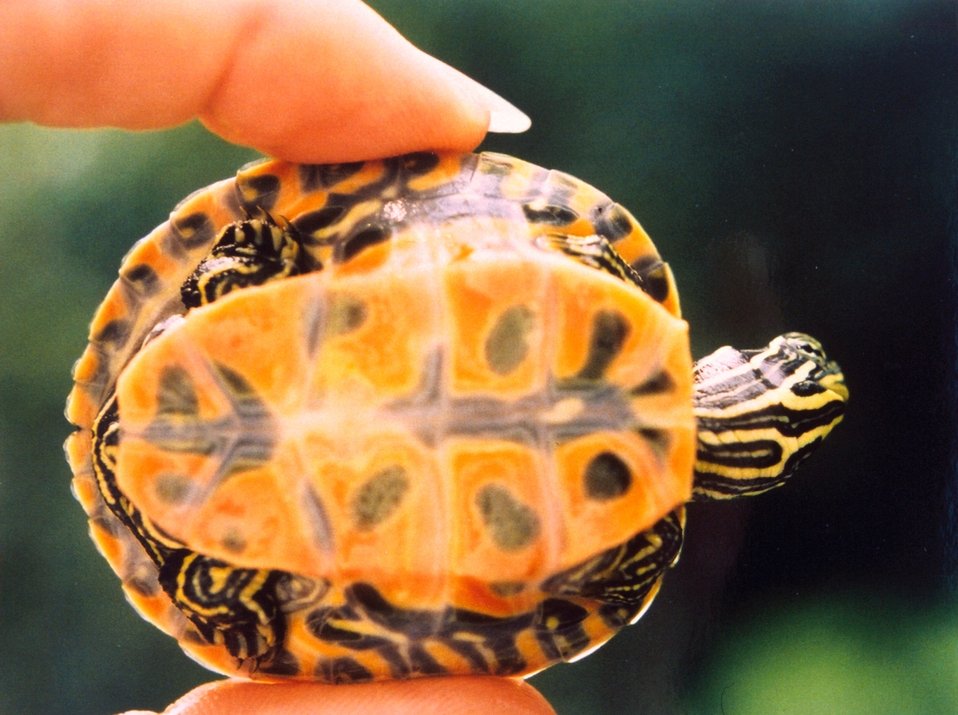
A baby red-bellied slider turtle (Pseudemys rubriventris rubriventris.)